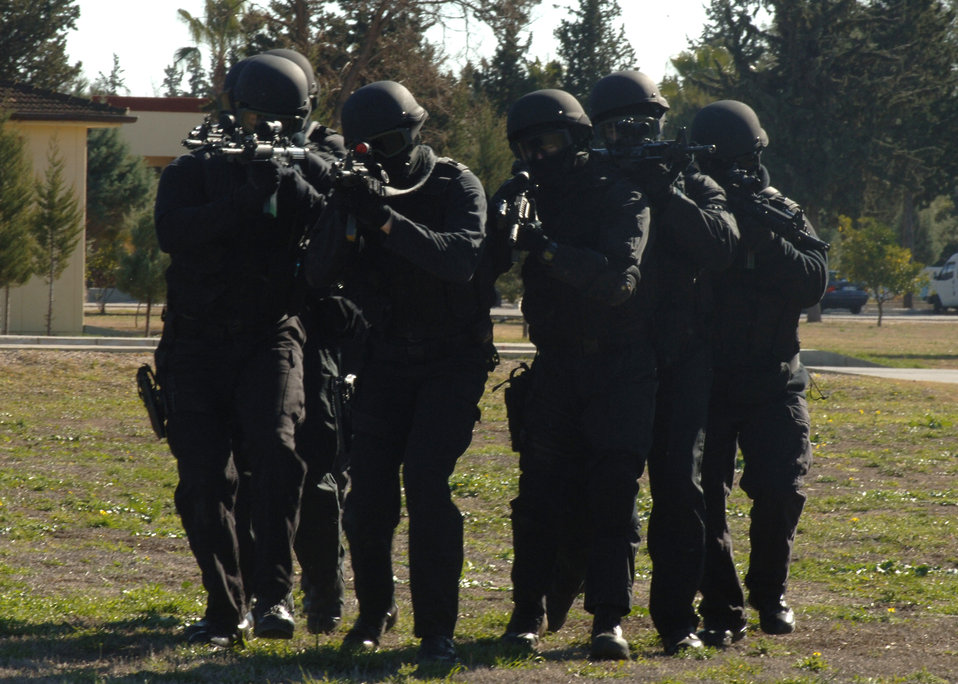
Best in Air Force

The 39th Security Forces Squadron is the best Large Security Forces Squadron in the Air Force for 2006. The award encompasses nearly every duty position security forces performs including community service.